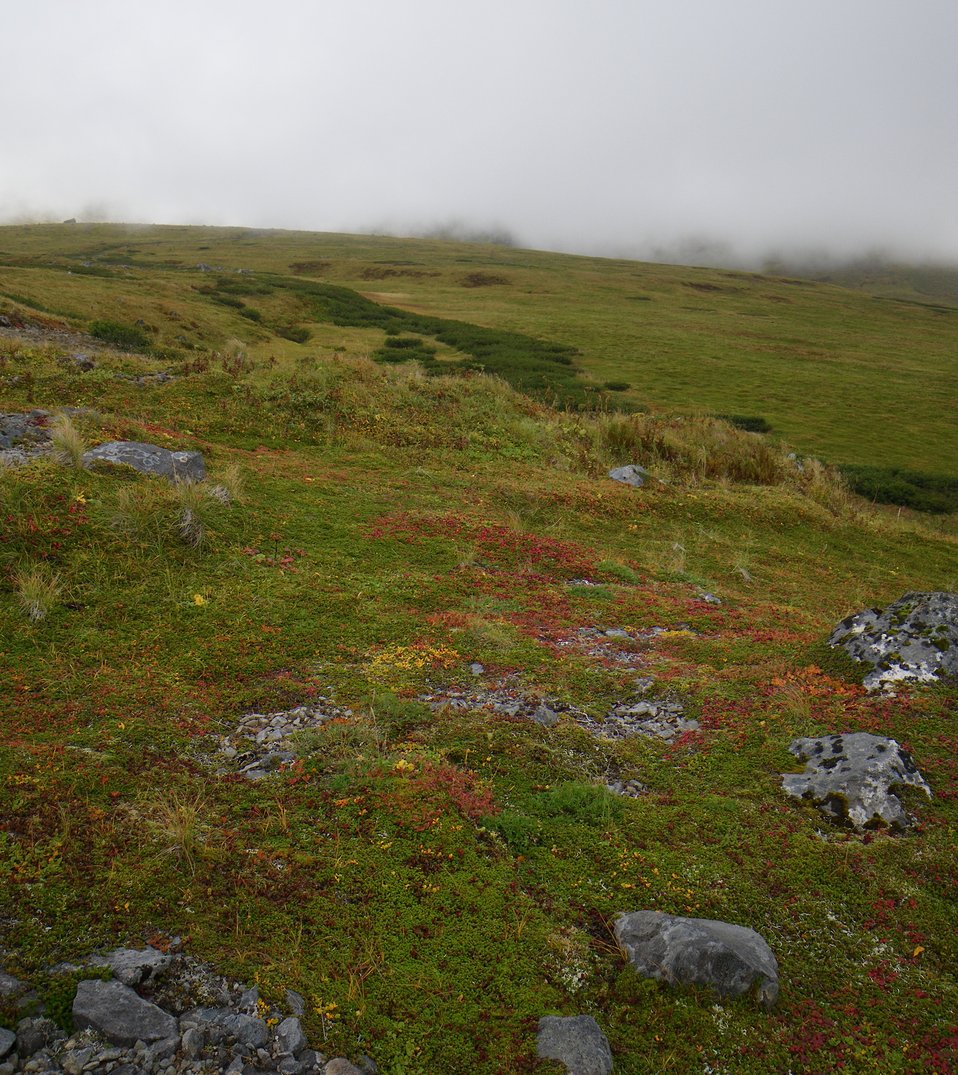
Fall colors

Wilderness near Frosty Peak, Izembek National Wildlife Refuge
Photo by Kristine Sowl,
USFWS, Public Domain